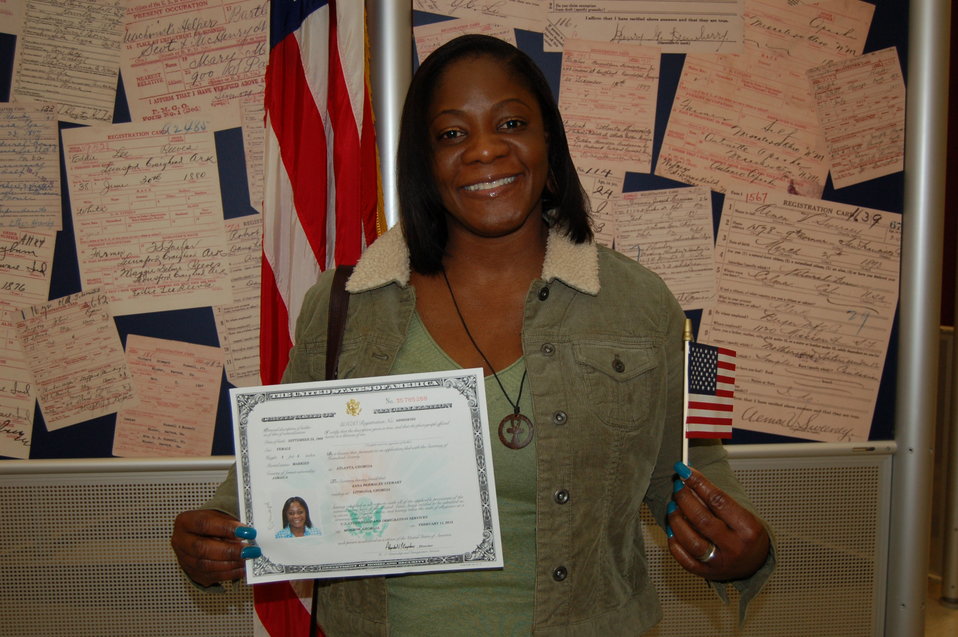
New Citizens